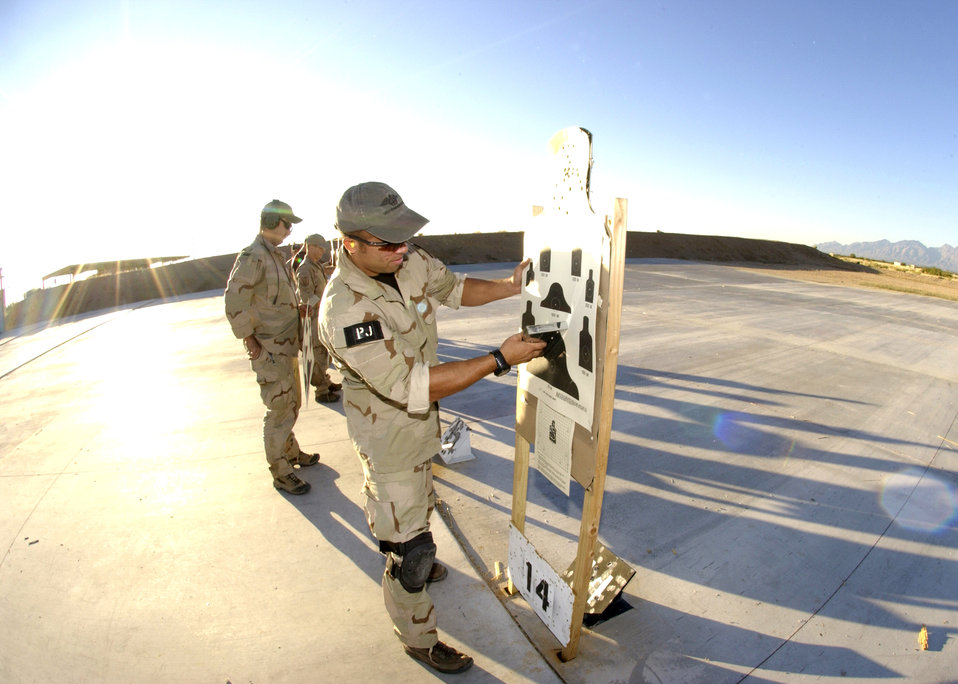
Making their mark

DAVIS-MONTHAN, Ariz. (AFPN) -- Tech. Sgt. Isiah Staley checks his target during training here. He is from the 306th Rescue Squadron.